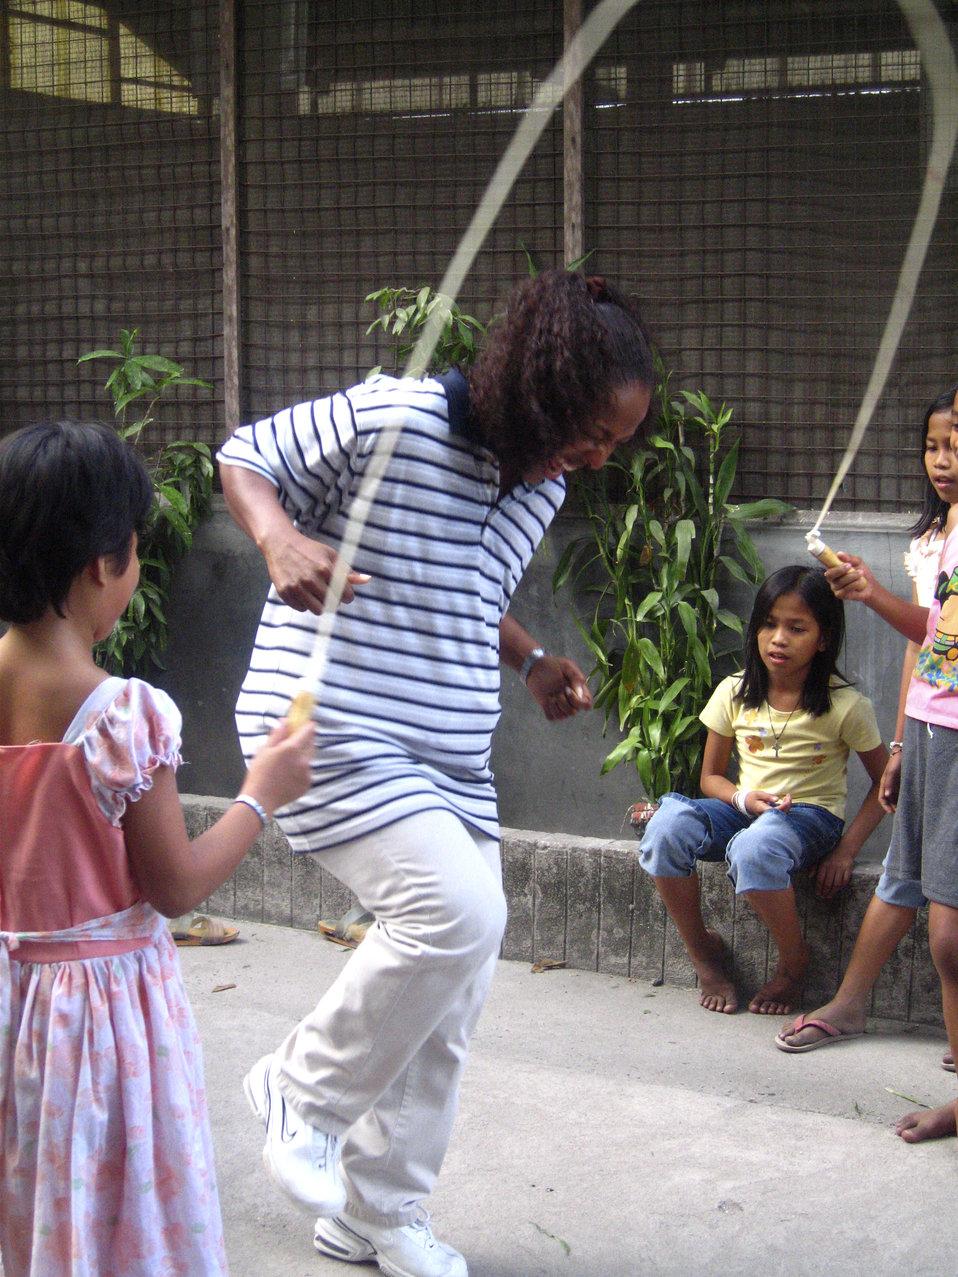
Making friends

Capt. Tiaundra Sorrell jumps rope with some of her new friends from the Children's Home of the Immaculate Heart of Mary in Angeles City, Philippines, Sunday, Feb. 26, 2006. The captain is deployed from the 36th Air Base Wing, Anderson Air Force Base, Guam. She and other servicemembers visited the home to bring cheer and gifts. The home is for abandoned girls from the ages of 6 to 16.